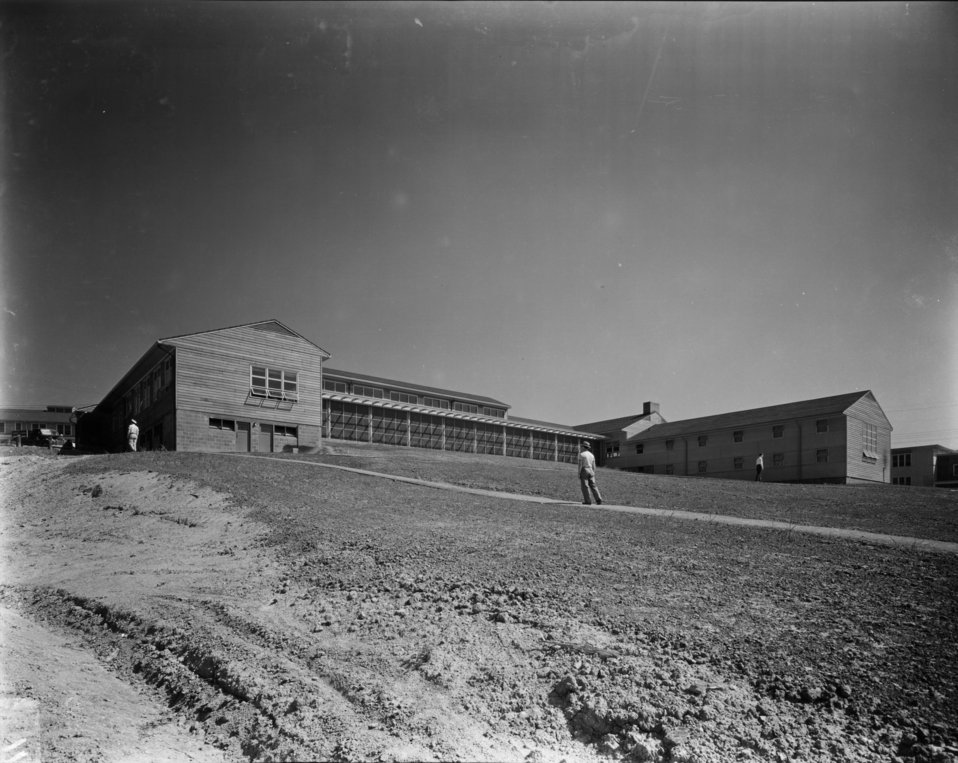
Schools at Oak Ridge